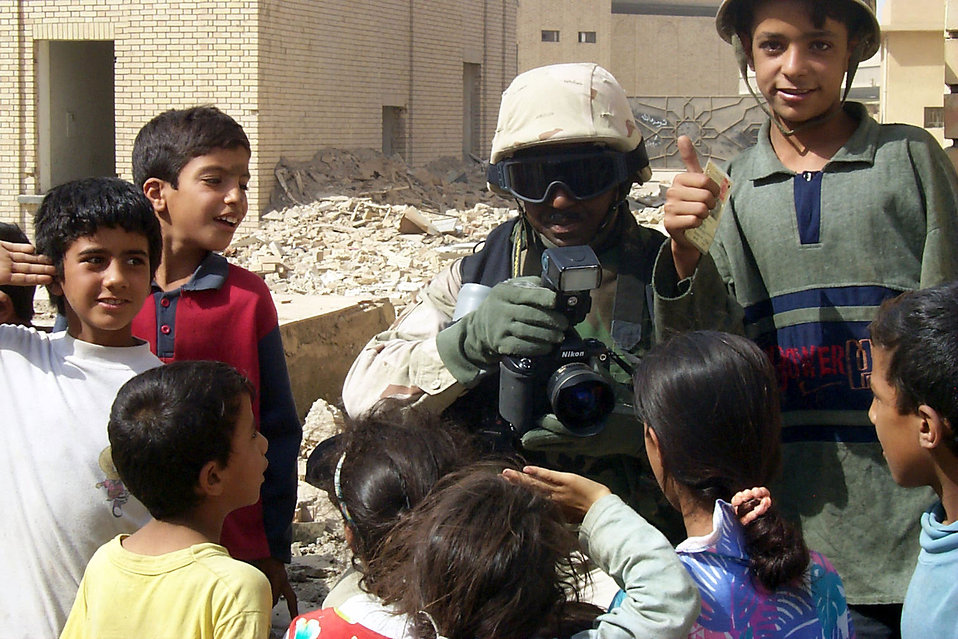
Sharing photos

BAGHDAD, Iraq -- Master Sgt. Michael Best shares pictures he had taken of Iraqi children who now live on the grounds of the Iraqi Ministry of Defense here. Best is a combat-camera photographer deployed from Charleston Air Force Base, S.C.